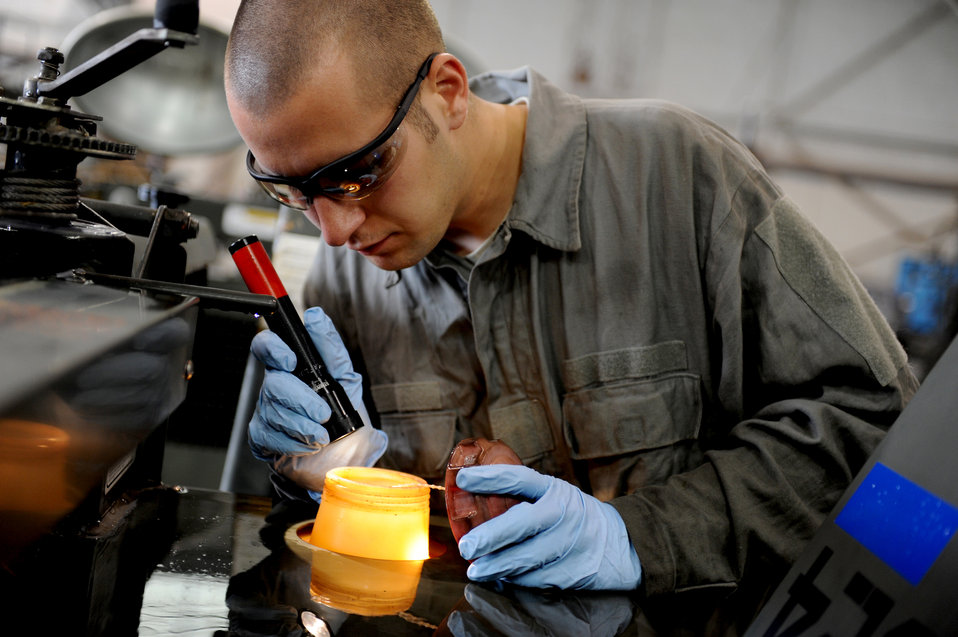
Take a look

Airman 1st Class Jefferey Zilko inspects the gas tank of a light cart at Barksdale Air Force Base, La., Nov. 29, 2010. Airman Zilko is an air ground equipment mechanic with the 2nd Maintenance Squadron.